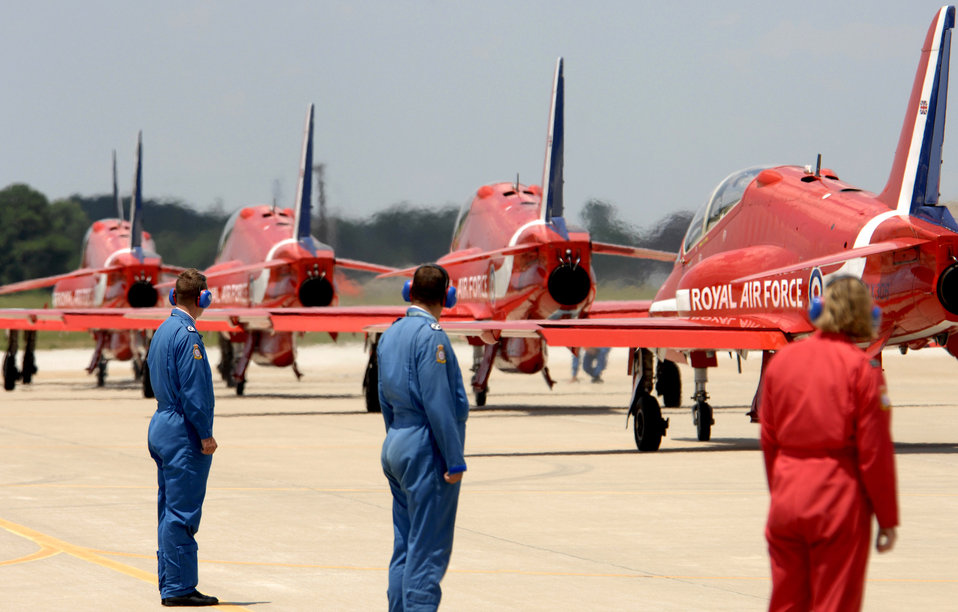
Raptor joins Red Arrows

The Royal Air Force Aerobatic Team, The Red Arrows, taxi down the runway before practicing June 18 at Langley Air Force Base, Va. The Red Arrows will perform at AirPower over Hampton Roads, the Langley AFB airshow, which is scheduled for June 20 to 22.